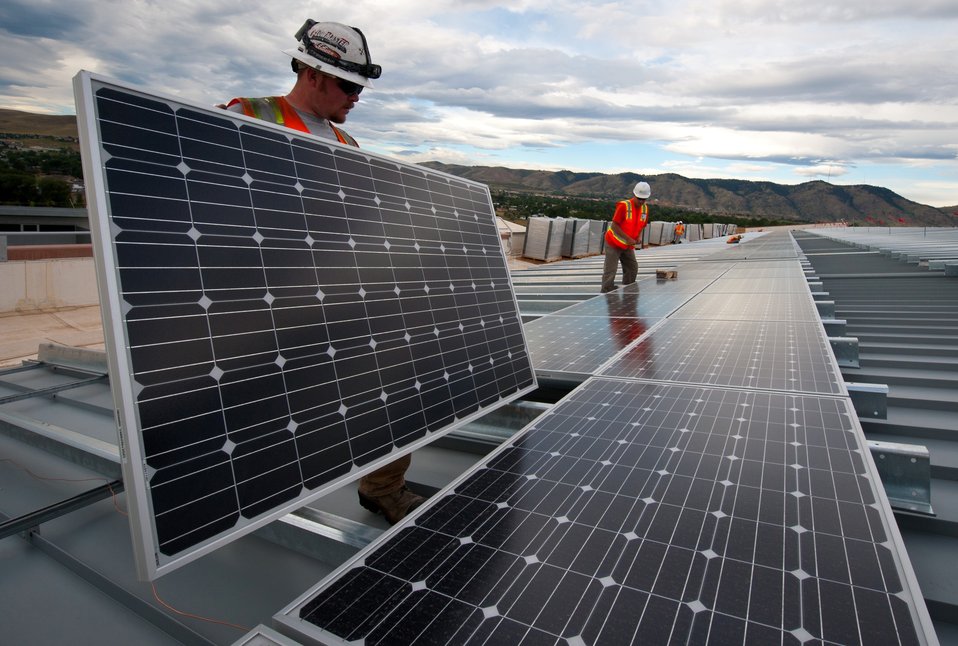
Installing Solar Panels

Brian Lawson and Kenesaw Burwell work on panels that the Energy Department is using to leverage a Power Purchase Agreement with Sun Edison and Xcel Energy. | Photo by Dennis Schroeder.

Photo of the Week: June 4, 2012